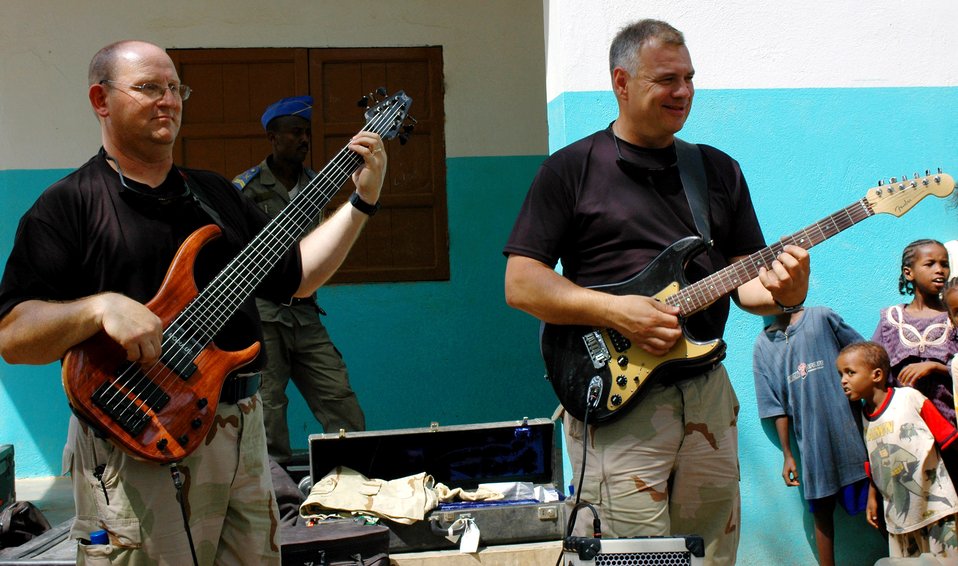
Rock band reaches out to Djiboutian villages

Master Sgt. August Wenck and Staff Sgt. Randy Roberson play to a crowd of Djiboutians Aug. 10 in the village of Danerjog during their Africa tour. The NCOs are members of the U.S. Central Command Air Forces band,